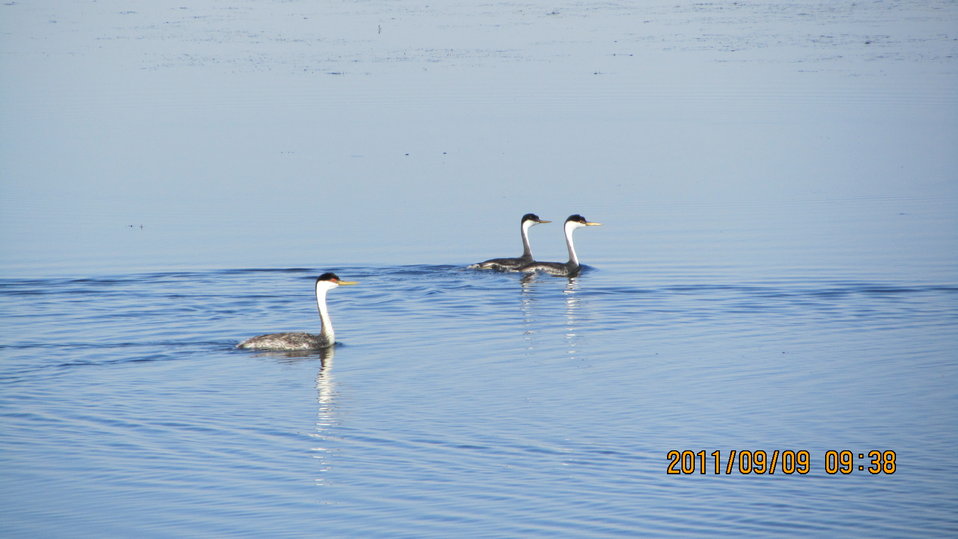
Western Grebe

The lands of the refuge were established to protect and provide habitat for migratory birds that cross State lines and international borders and are by law a Federal trust responsibility.
The refuge is of great value to waterfowl and shorebirds, as well as other migrating water-dependent bird species, because of the diversity of wetland and upland habitats that provide for the diverse life cycle needs of these species.